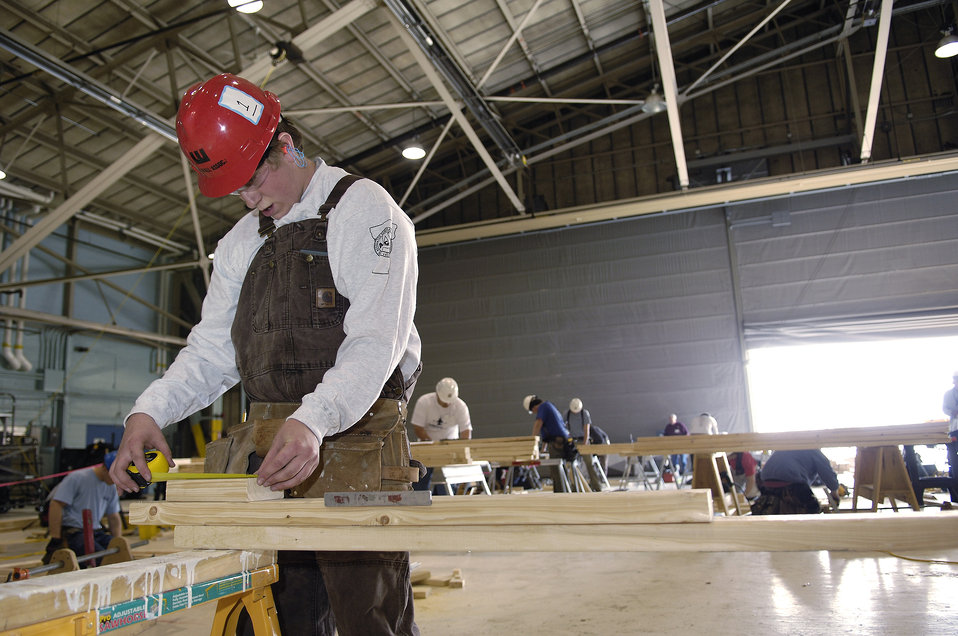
Vermont Guard hosts leadership, skills competition

SkillsUSA competitor Travis Bombard measures a two-by-four during carpentry competition at the Vermont Air National Guard base in South Burlington, Vt. The hangar normally serves as a weapons loading bay for the unit's F-16 Fighting Falcons. Mr. Bombard is a 12th grader at Barre Technical Center in Barre, Vt.